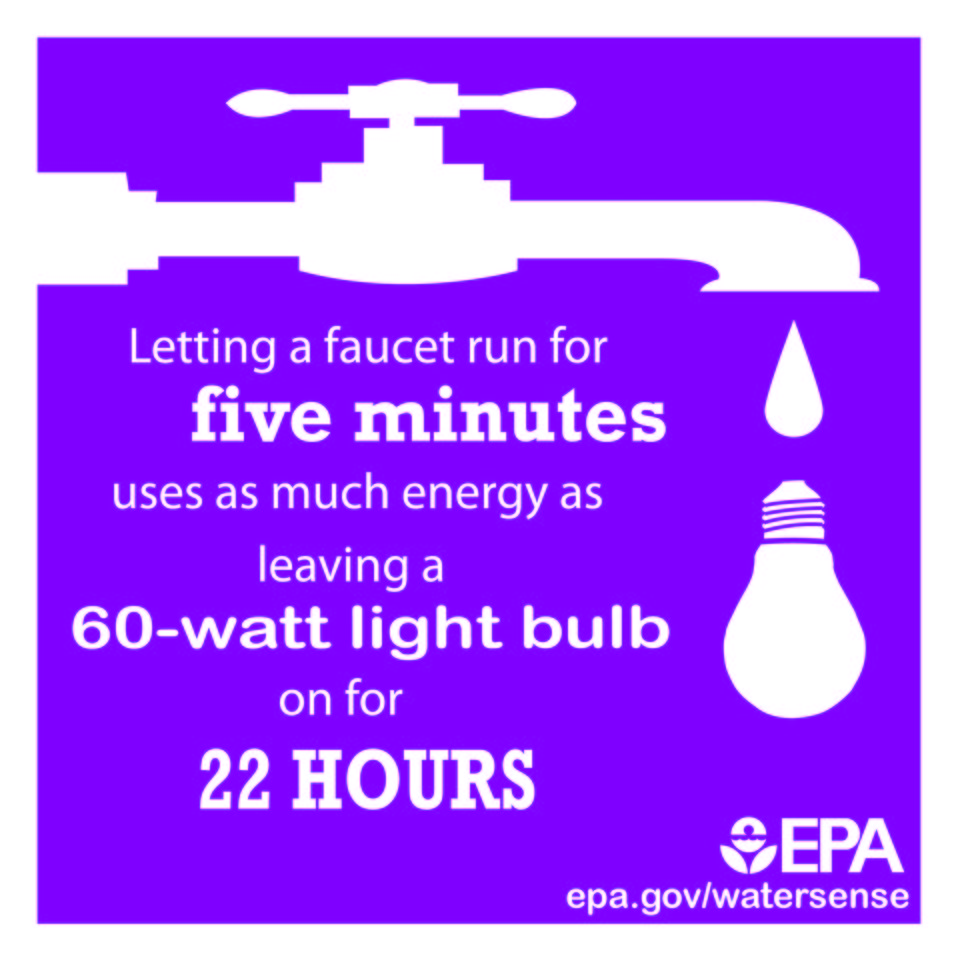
Saving Water Saves Energy

Did you know saving water also saves energy and money?